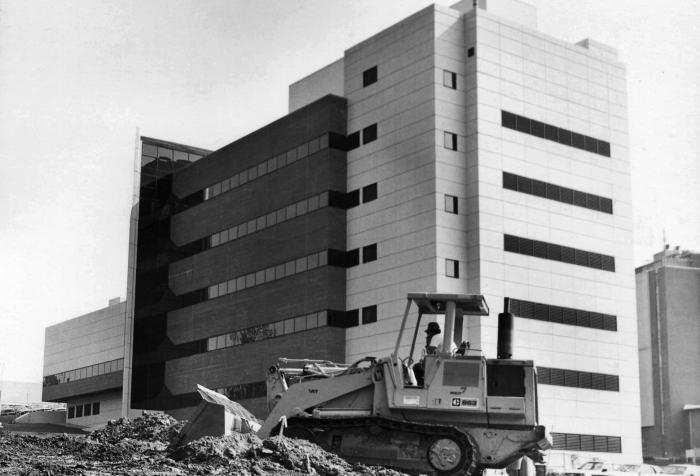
This late 1980s photograph showed the construction, which was taking place outside of what would become the Centers for Disease Control's, Building 15 on the Roybal Campus located in Atlanta, Georgia.